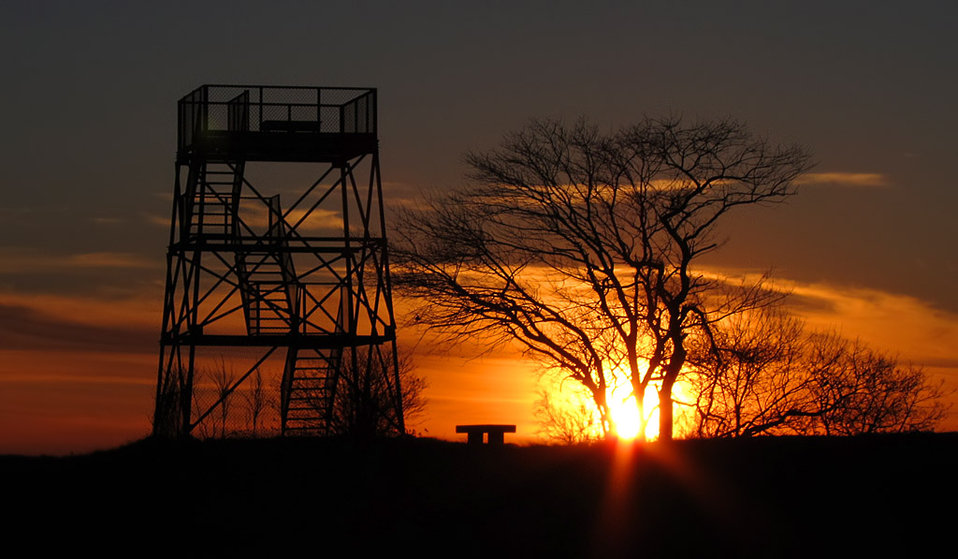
Hellcat at sunset

Parker River National Wildlife Refuge, MA.